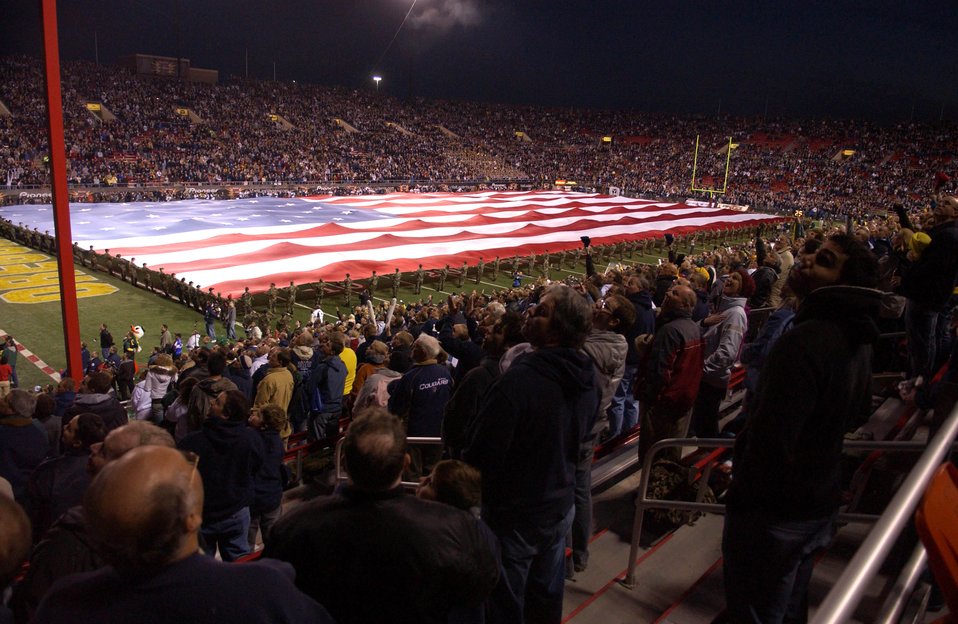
Airmen present the flag

250 Airmen hold a 100-yard-by-50-yard American flag across the football field at the Las Vegas Bowl Dec. 21 while football fans look skyward as two F-15E Strike Eagles fly over the stadium during the national anthem. The Airmen and F-15s are from Nellis AFB, Nev.